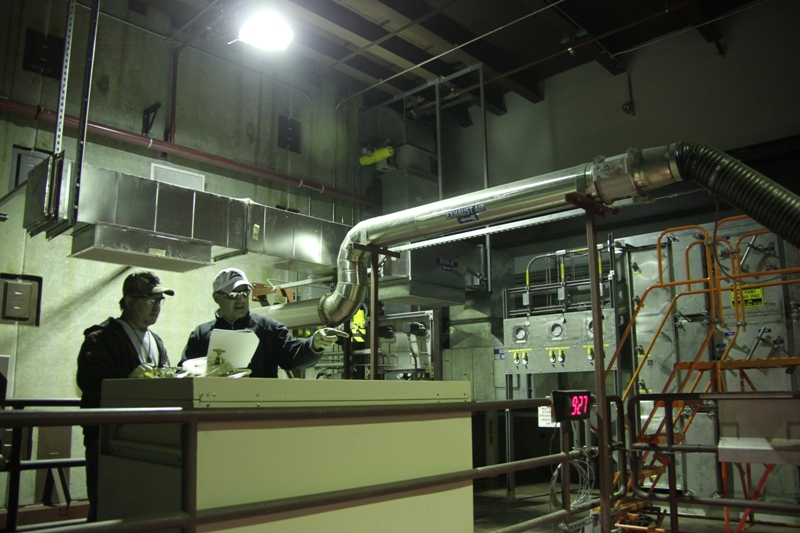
Stimulus jobs build skill sets, confidence

A worker and trainer review a work package to prepare for upcoming work at a Hanford facility. On-the-job, facility specific training is one of several stages of training Hanford workers receive before beginning work at the site.